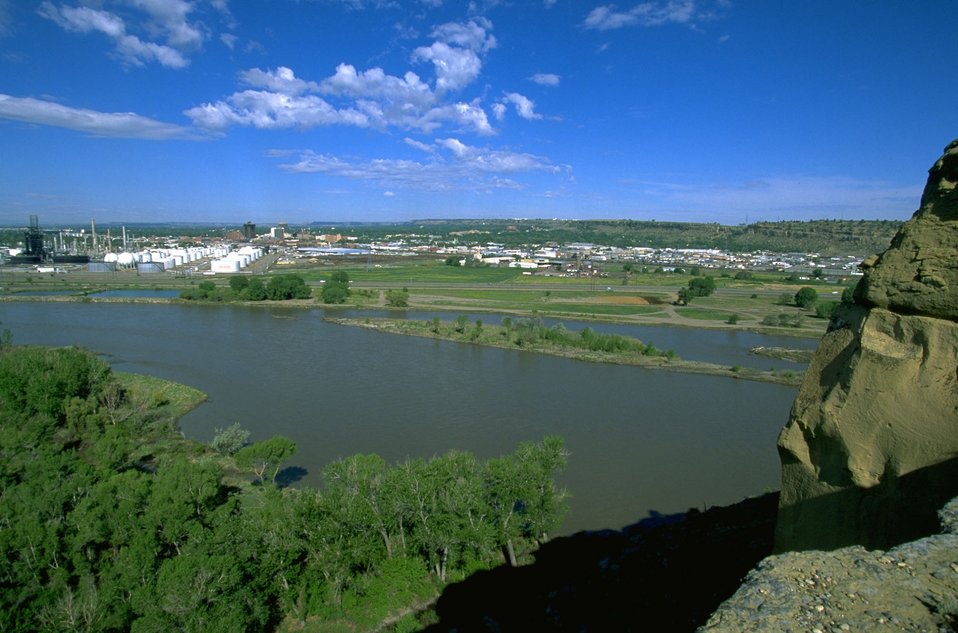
View of the Yellowstone River from the rimrocks in the Four Dances Natural Area. Billings MT is in the background.